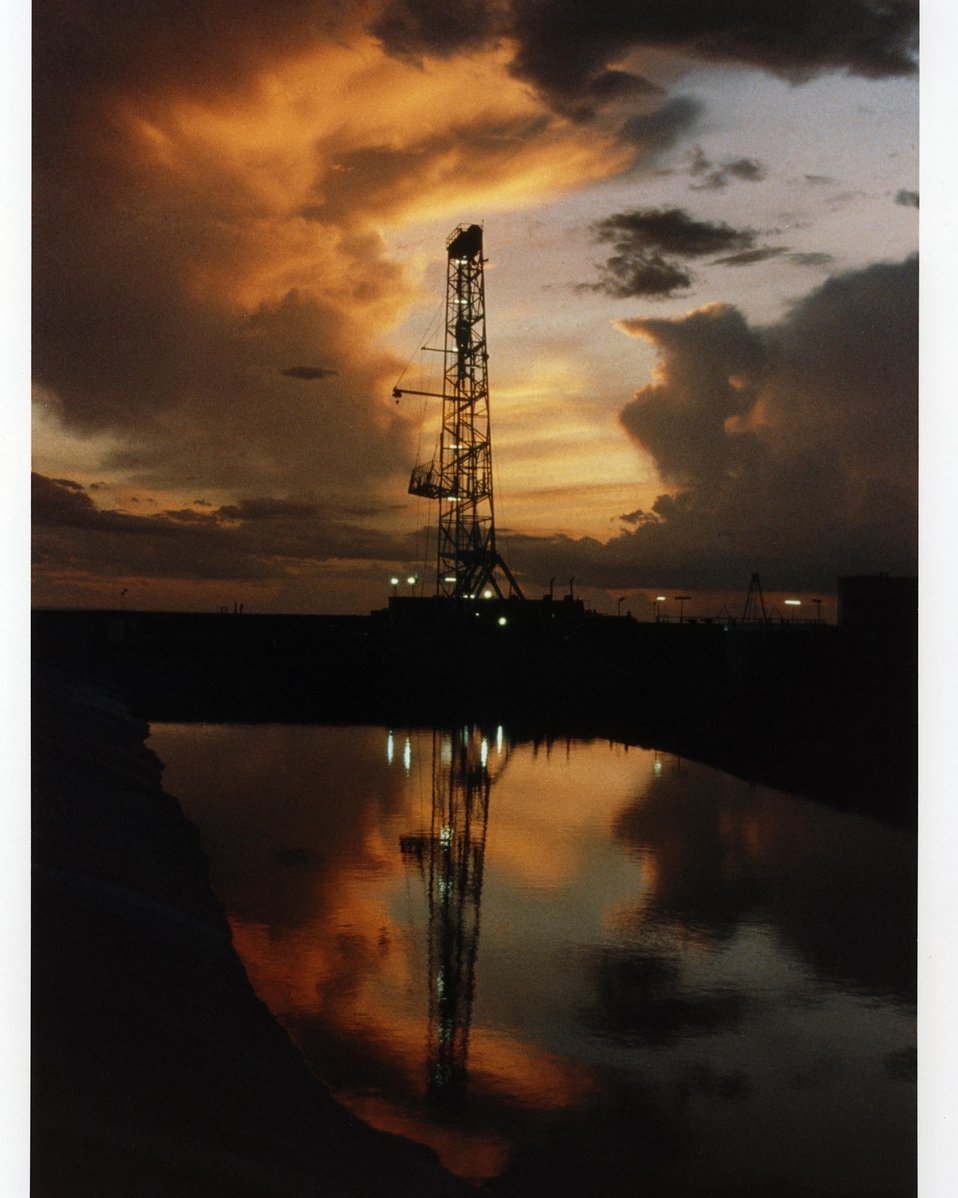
DERRICK AT THE WIPP SITE AT SUNSET.

THE WASTE ISOLATION PILOT PLANT IS A DOE RESEARCH AND DEVELOPMENT FACILITY FOR DEMONSTRATING THE SAFE DISPOSAL OF TRANSURANIC RADIOACTIVE WASTES. TEST SHAFTS HAVE BEEN DRILLED TO A DEPTH OF 2,100 FEET. THE SHAFTS, ONE 6 FEET IN DIAMETER AND THE OTHER 12 FEET IN DIAMETER, PROVIDE AN ENTRY PASSAGE AND VENTILATION TO THE UNDERGROUND SALT ROCK FORMATION THAT IS BEING TESTED TO DETERMINE ITS SUITABILITY FOR RADIOACTIVE WASTE STORAGE.